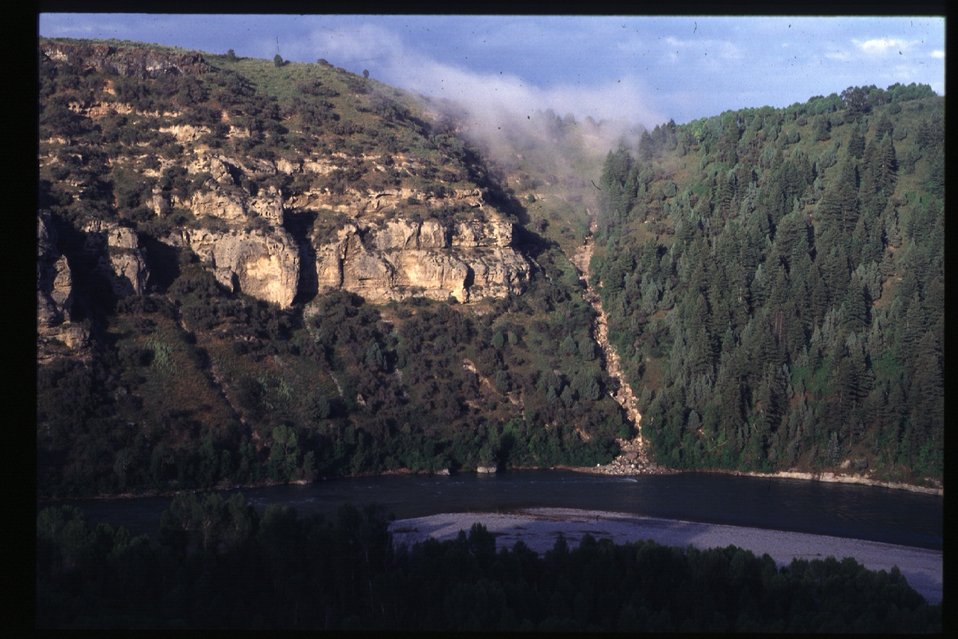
South Fork of Snake River Idaho Falls Field Office USRD Upper Snake River District